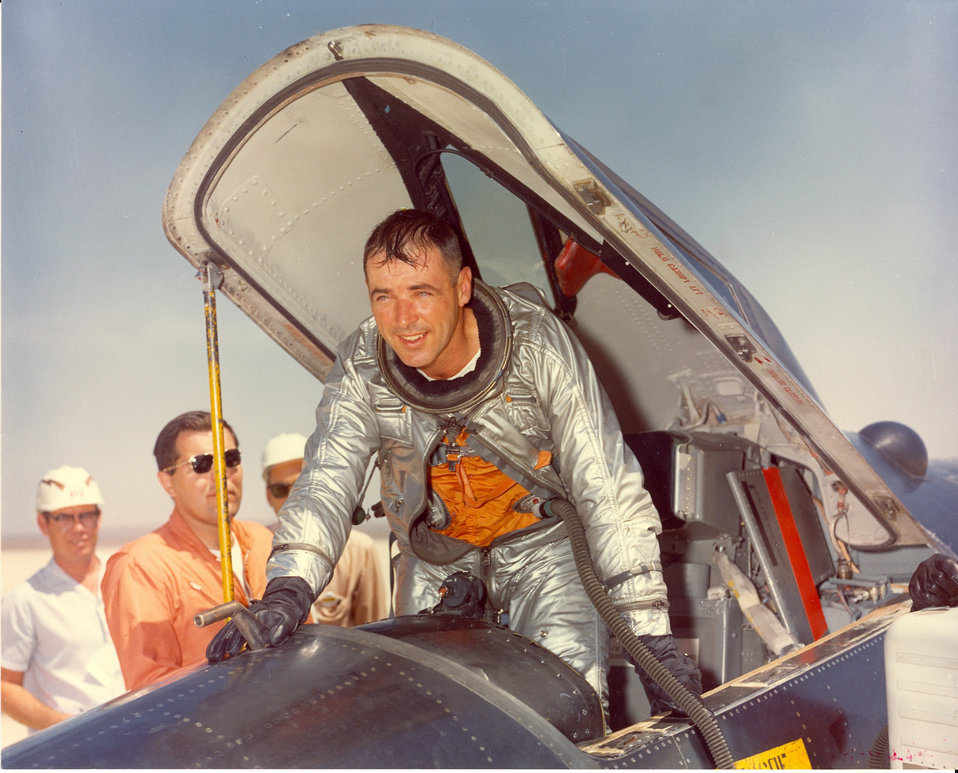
Maj. Robert M. White, X-15 test pilot

Maj. Robert M.